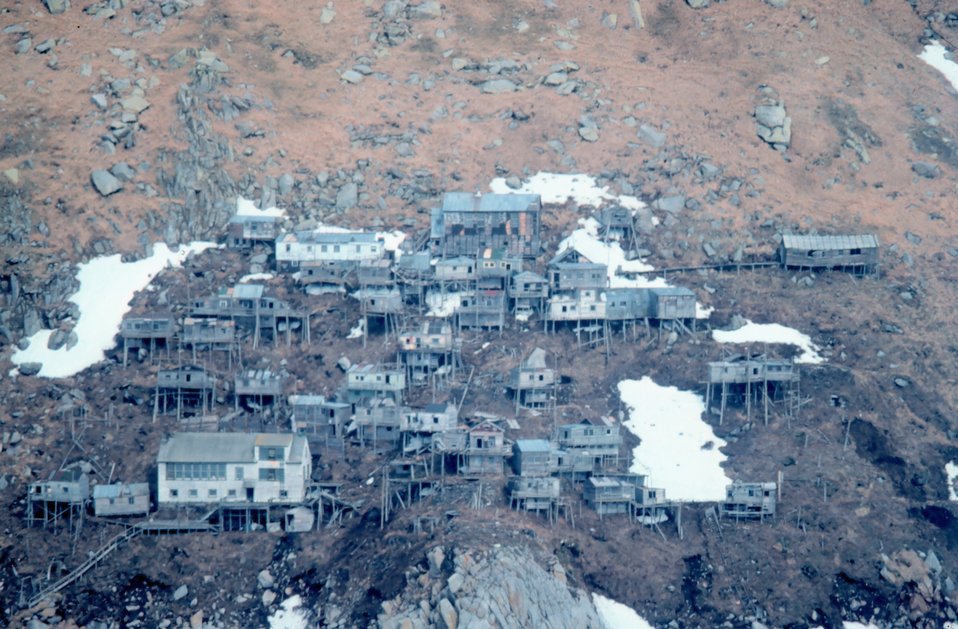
The stilt village of Ukivok - this is now deserted.